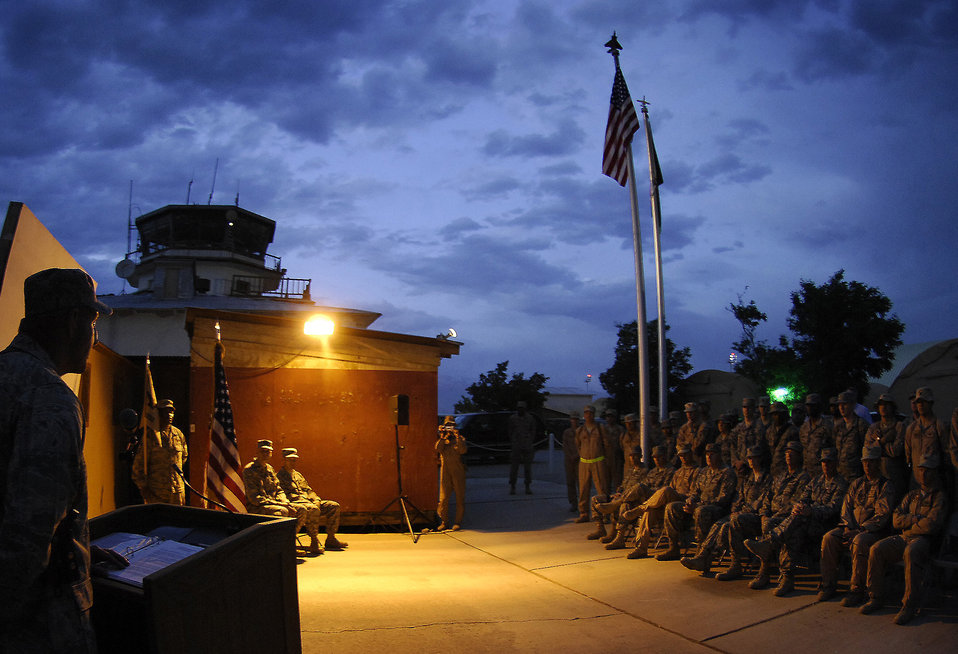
Sunset ceremony

During a change of command ceremony May 20, Col. Raymond Strasburger, 455th Expeditionary Operations Group commander, speaks about Lt. Col. Wayne Straw's one-year tenure as the operations support squadron commander.